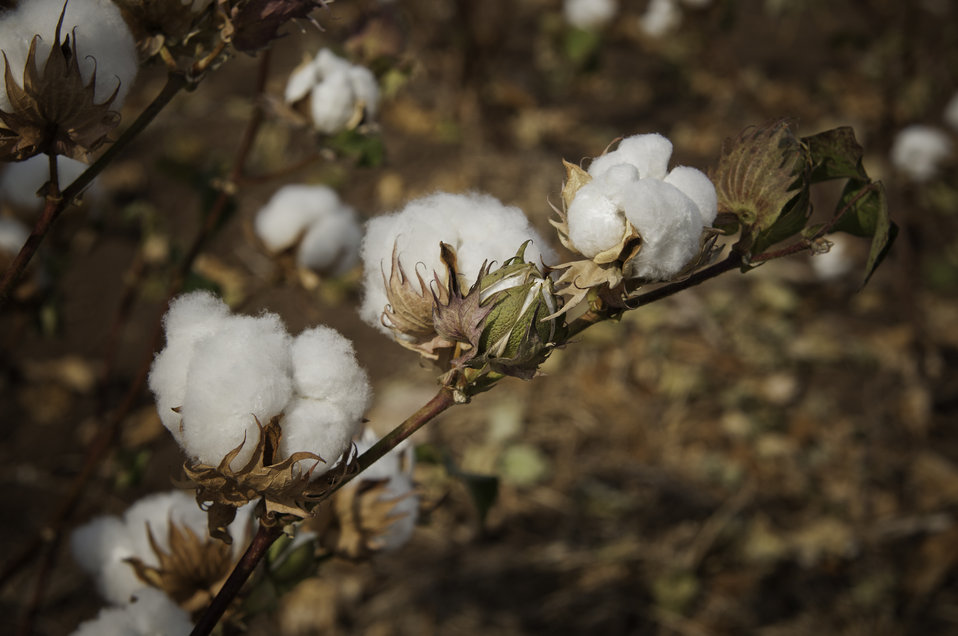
Dry Land cotton grows on a farm in Navasota, TX on Aug. 23, 2013.